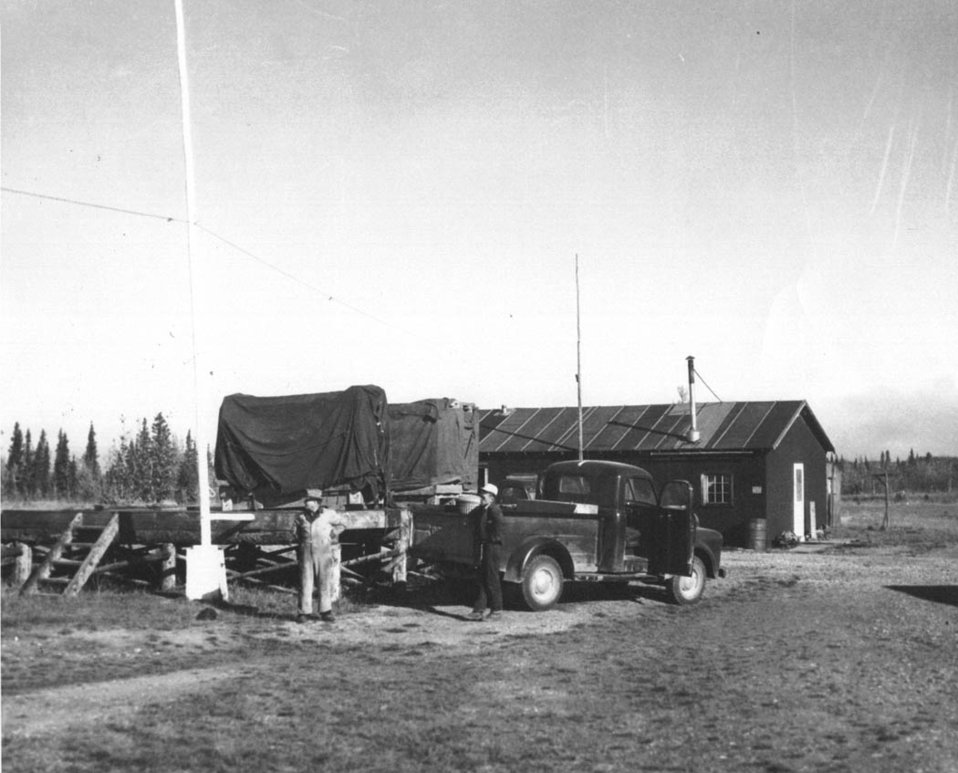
Bison in crates

Bison transplanting operation in Big Delta,